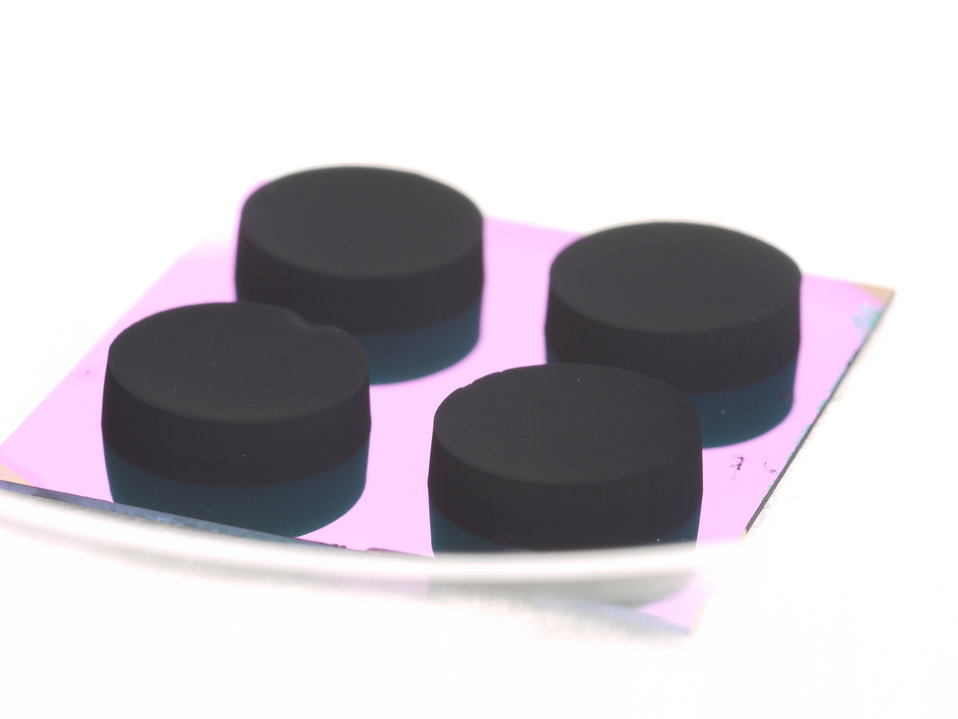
VANTAs

'Cupcakes' of vertically aligned carbon nanotube arrays (VANTAs) grown on silicon, which appears blue in the photo. A chunk of VANTA can be sliced from the silicon with a razor blade and, using the blade as a spatula, easily moved to the top of a laser power detector. The very dark nanotube coating absorbs terahertz laser light.